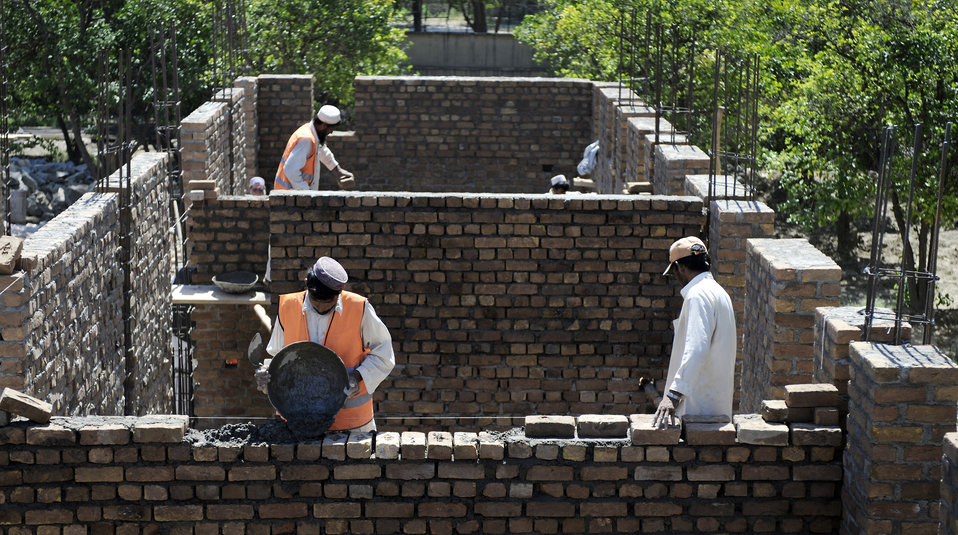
Afghanistan's future foundation

Local contractors spread mortar for a development site May 30, in Nangarhar Province, Afghanistan. The development is monitored by the Nangarhar Provincial Reconstruction Team, Forward Operating Base Finley-Shields, Afghanistan. The PRT is responsible for development and reconstruction projects in Nangarhar Province. The projects are built by local and contractors and are designed to improve the livelihood of the people living in the area.